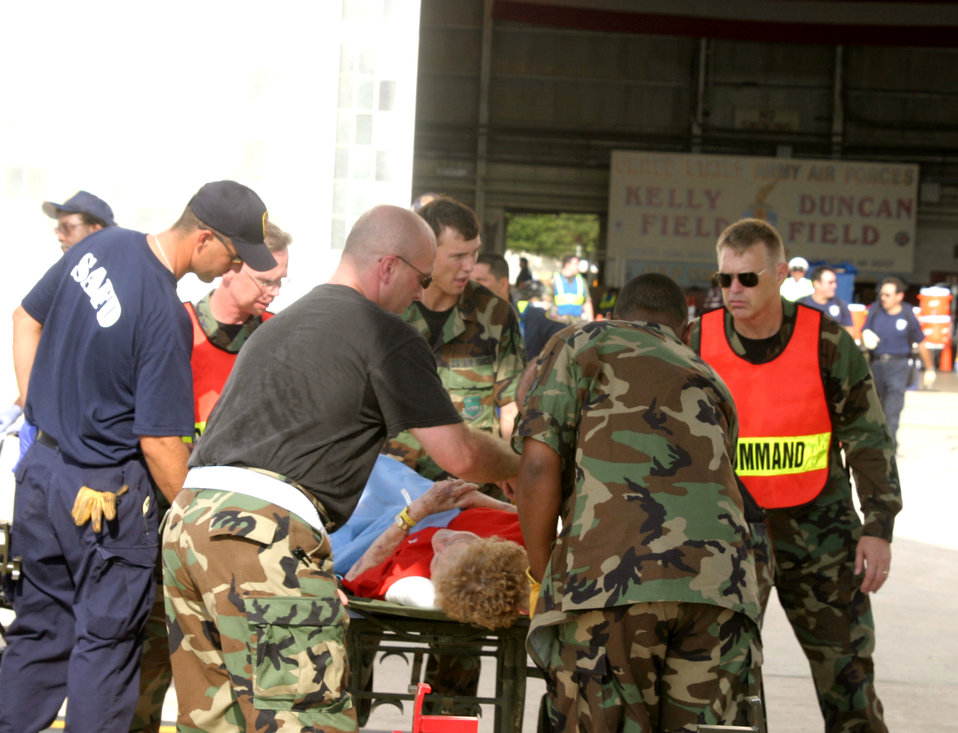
Hurricane relief mission

LACKLAND AIR FORCE BASE, Texas -- Emergency responders tend to injured evacuees Sept. 3. C-130 Hercules crews from the 50th Airlift Squadron at Little Rock Air Force Base, Ark., teamed up with Airmen from the 452nd Aeromedical Evacuation Squadron at March Air Reserve Base, Calif., to relocate sick and injured patients devastated after Hurricane Katrina.